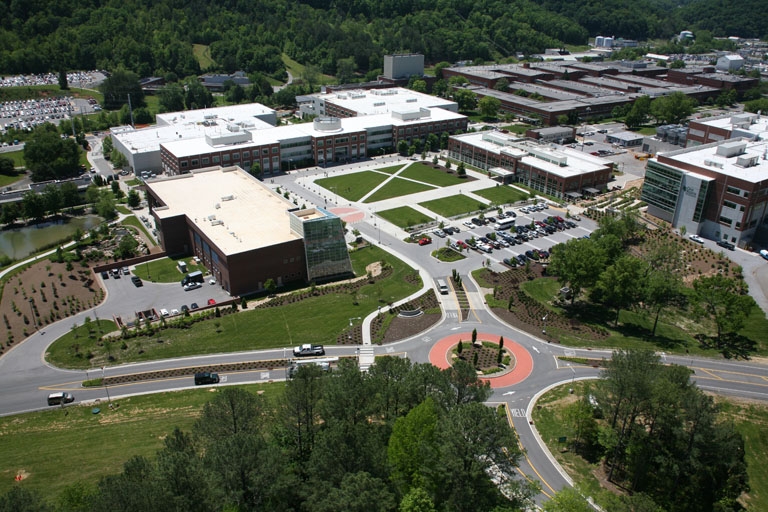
Oak Ridge aerial view - West Campus

ORNL’s modern west campus.